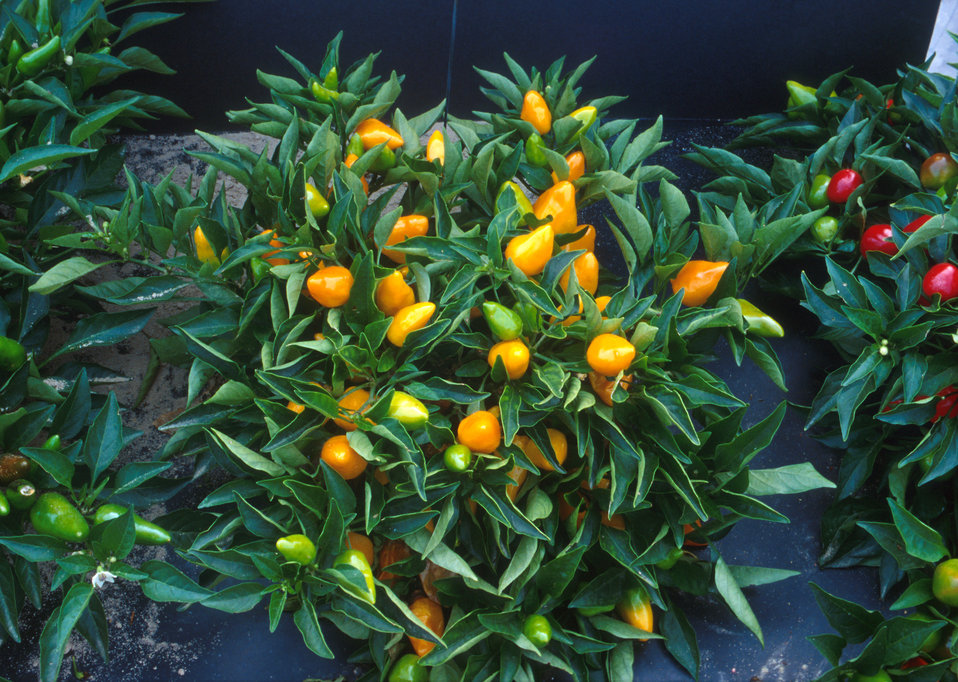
Compact orange pepper plants bear upright, pungent fruit.